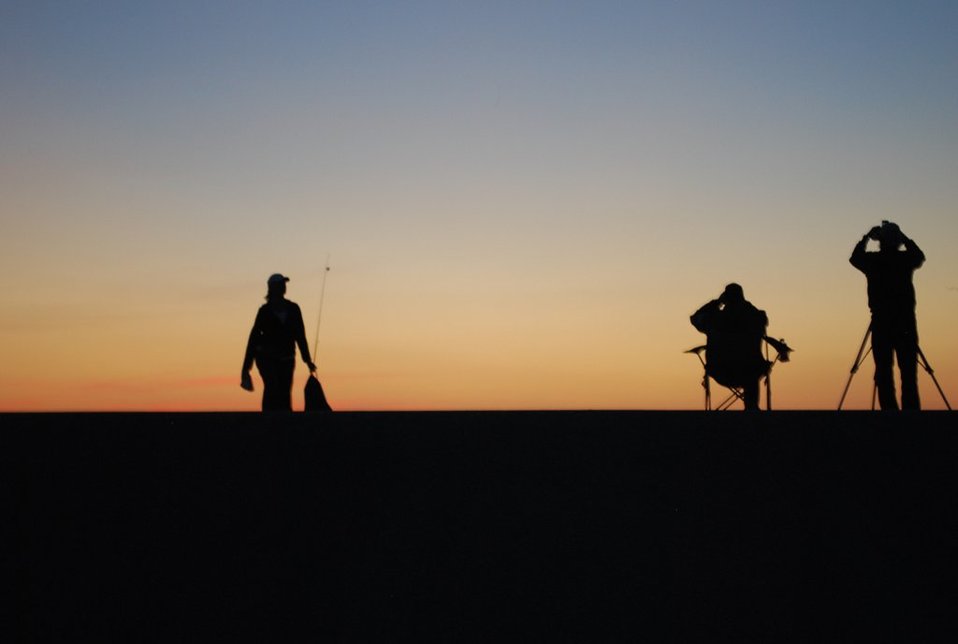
Star party, Loxahatchee Refuge

Star party, Arthur R. Marshall Loxahatchee National Wildlife Refuge. Credit: Kay Larche. An angler with her catch